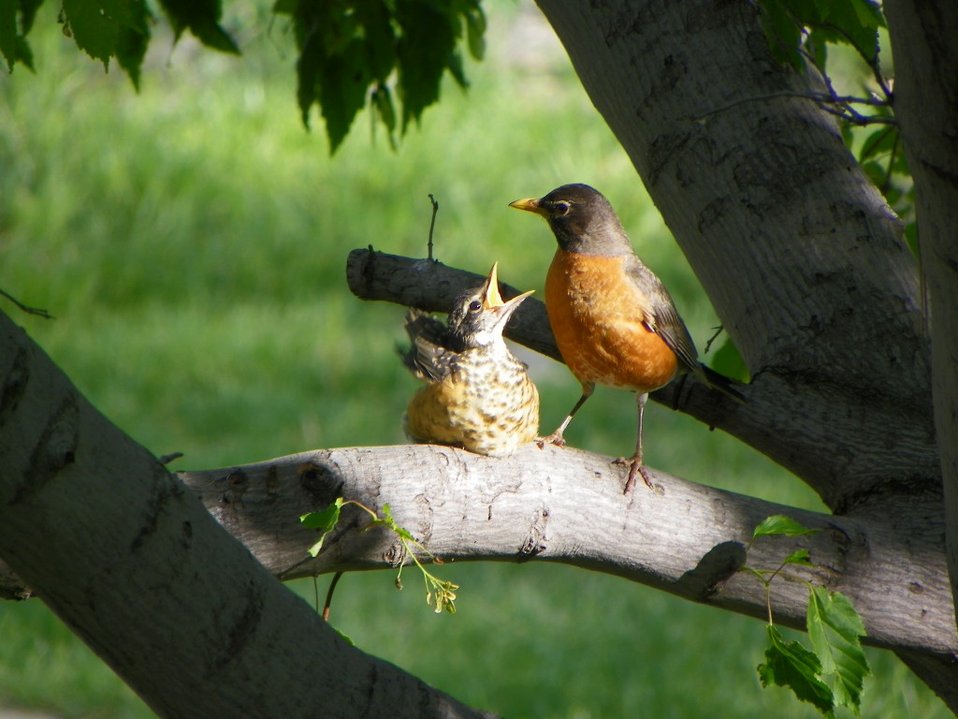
Feed Me Please!

One day after leaving the nest, this young robin wants to be fed.

Location: Pierre, SD

Credit: Shelley Erickson / USFWS

Photo Contest Entry #182